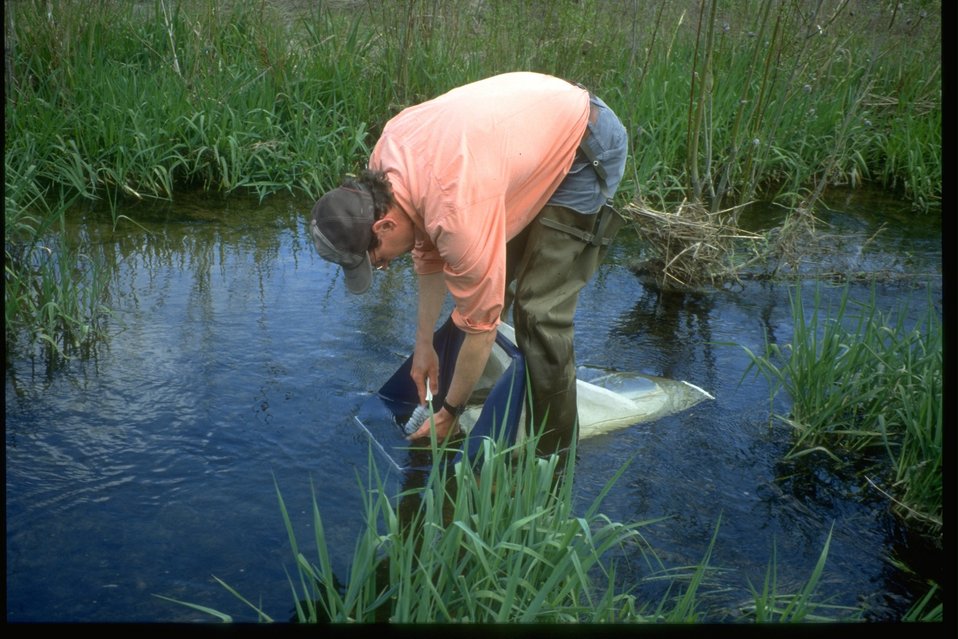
Sampling aquatic macro invertabrates in Douglas Creek.